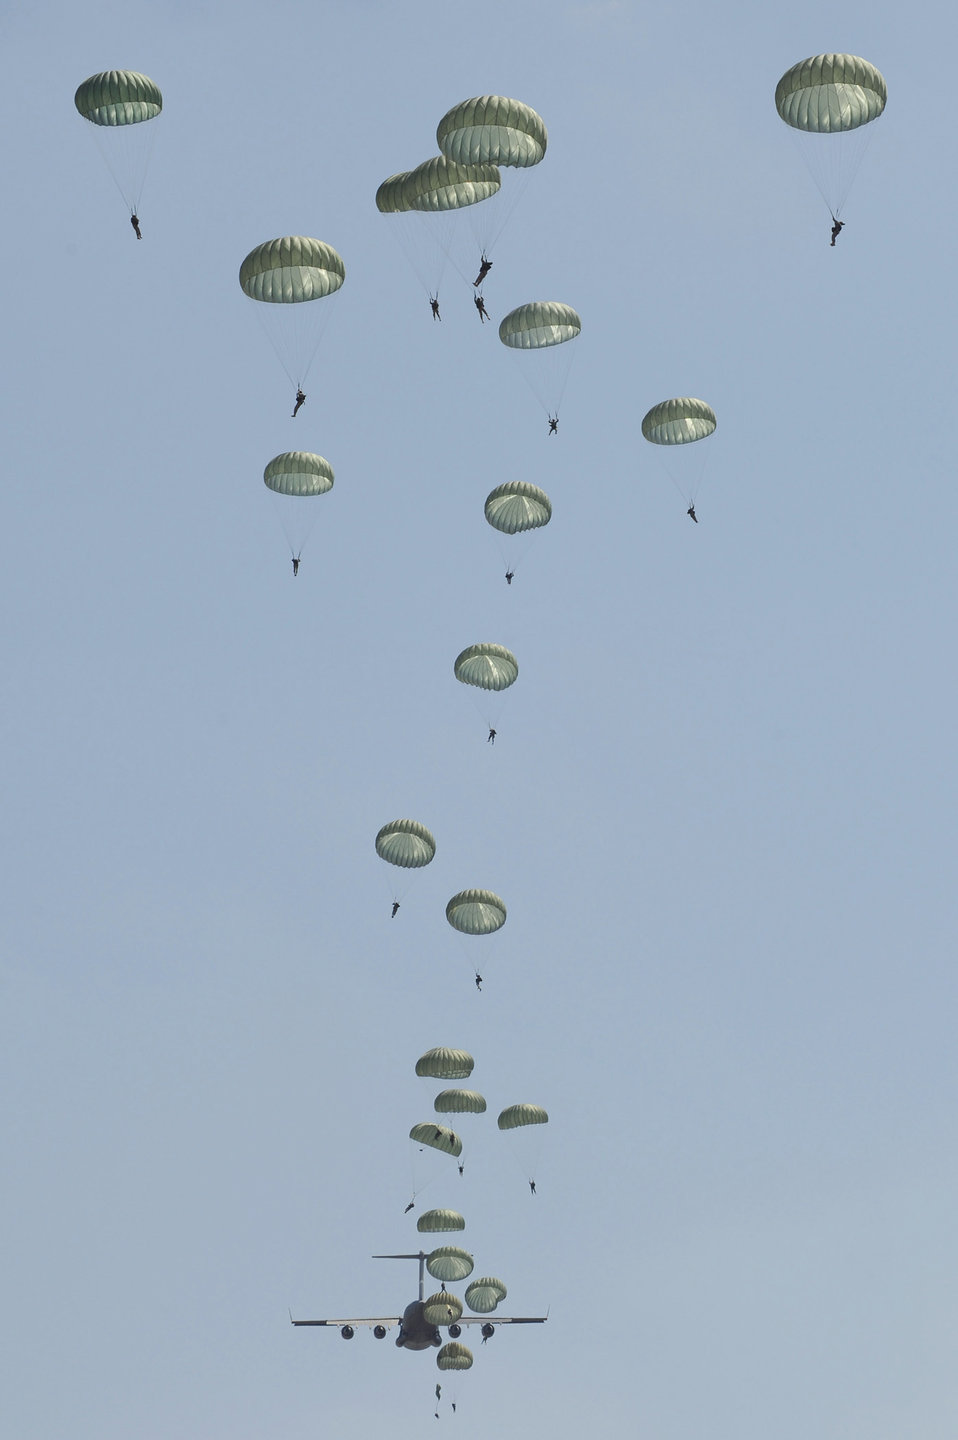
On our way down

U.S. Army paratroopers from the 82nd Airborne Division at Fort Bragg, N.C., jump from a C-17 Globemaster III during a joint forcible entry exercise June 21, 2010. The purpose of the joint exercise is to re-establish forcible entry capability through airpower by combining Army and Air Force training needs.